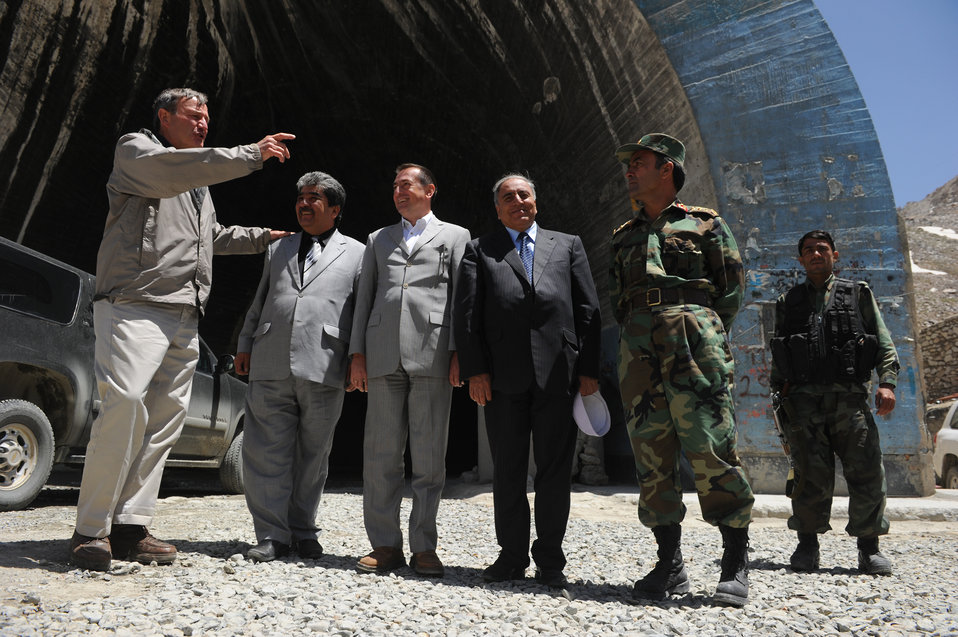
U.S. Ambassador Karl W. Eikenberry attends a ceremony to mark the beginning of renovations at the Salang Tunnel on the border of Parwan and Baghlan Provinces, Afghanistan, on Wednesday, June 15, 2011. (S.K.Vemmer/Department of State)